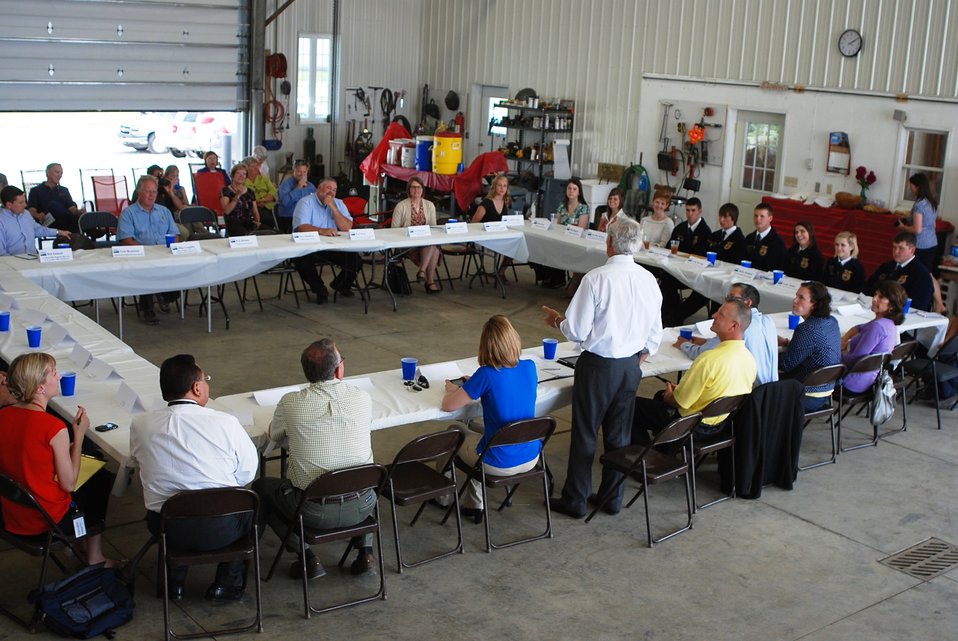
Agriculture Acting Deputy Secretary Michael Scuse hosts a roundtable discussion with Ohio FFA and 4-H in Licking County, OH on Thursday, May 30, 2013.